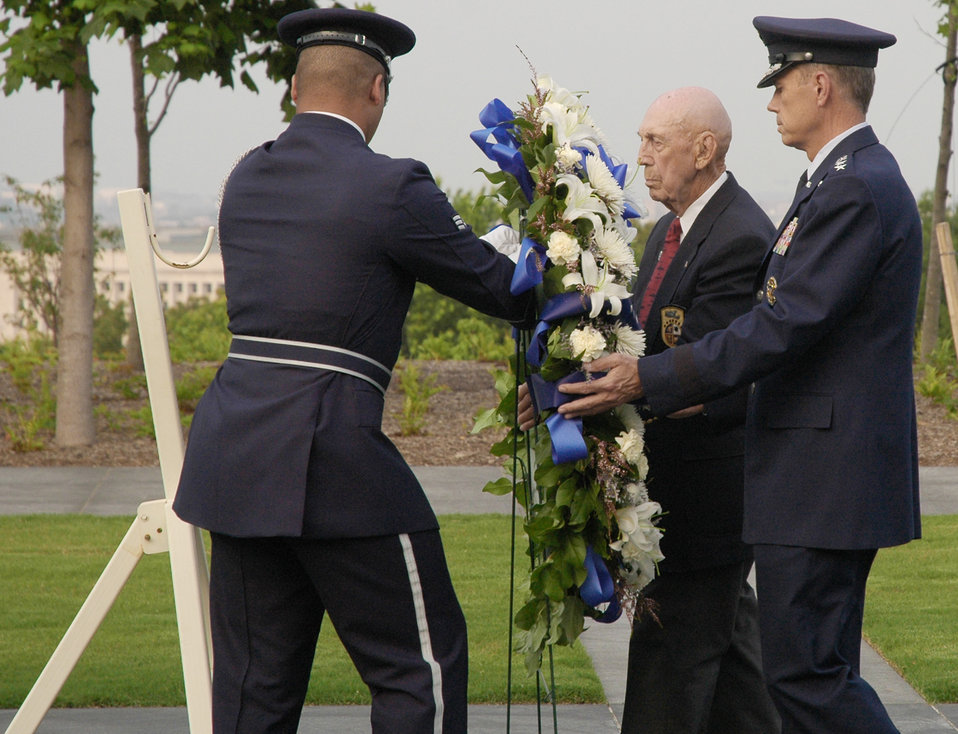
Wreath lying honors fallen Doolittle Raider

Air Force Vice Chief of Staff Gen. William M. Fraser III and surviving Doolittle Raider Richard Cole are assisted by an Air Force Honor Guard member during a wreath-laying ceremony June 19 at the U.S. Air Force Memorial in Arlington, Va. The wreath was laid near the Missing Man Wall to honor Maj. Gen. David Jones, a former Doolittle Raider and prisoner of war, who was buried at Arlington National Cemetery earlier that day.